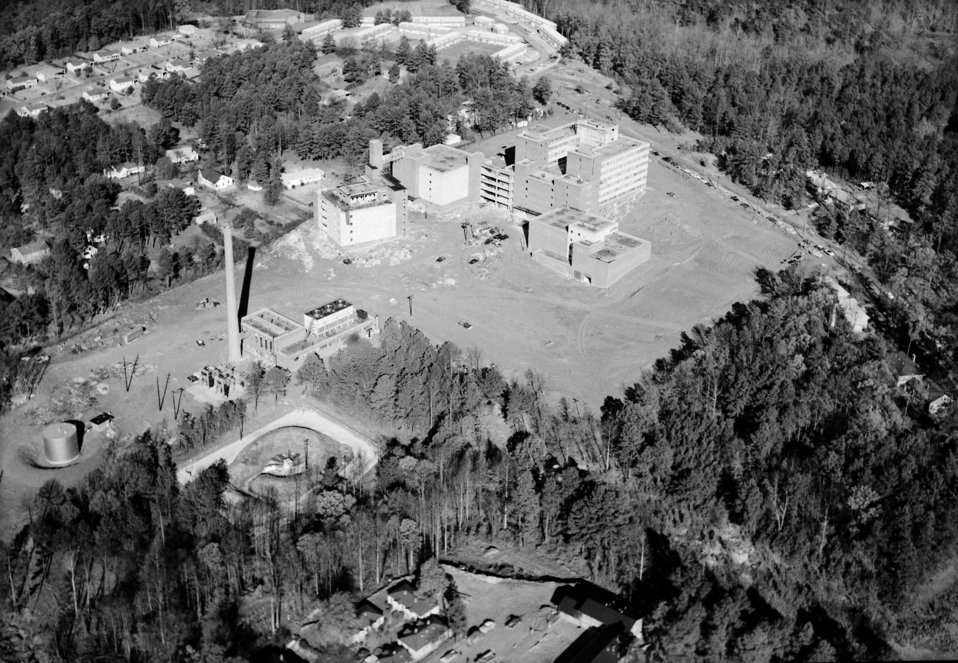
An aerial photo of the CDC (facing northwest) Clifton Road Roybal Campus, Atlanta, GA. while under construction in 1959.